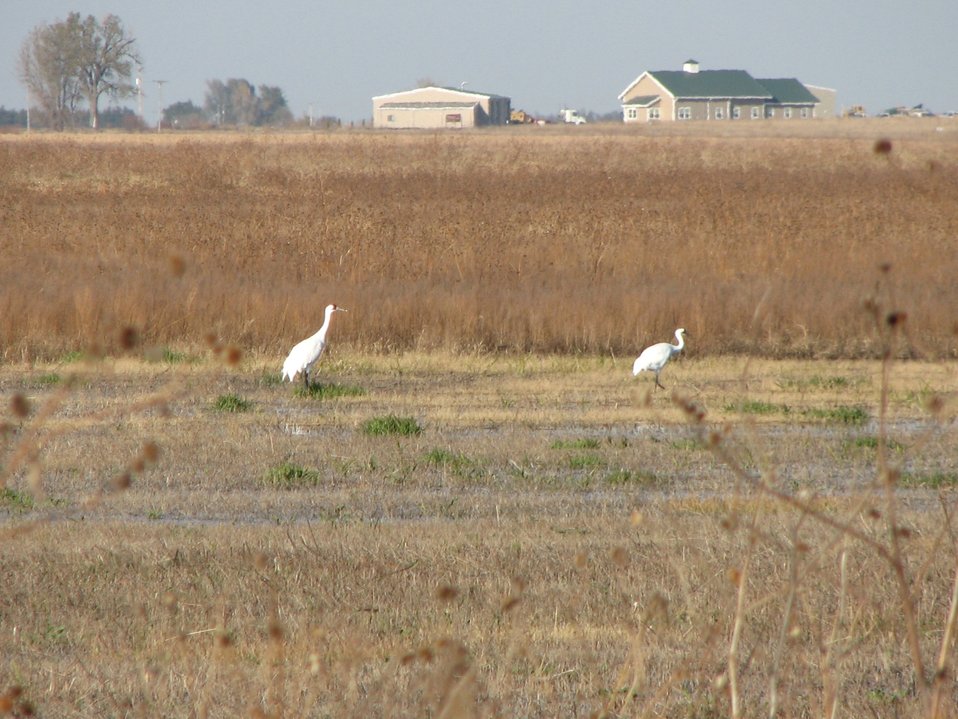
Whooping Cranes in Nebraska

Whopping Cranes spotted at the Funk waterfowl production area at the Rainwater Basin National Wildlife Refuge in Nebraska.